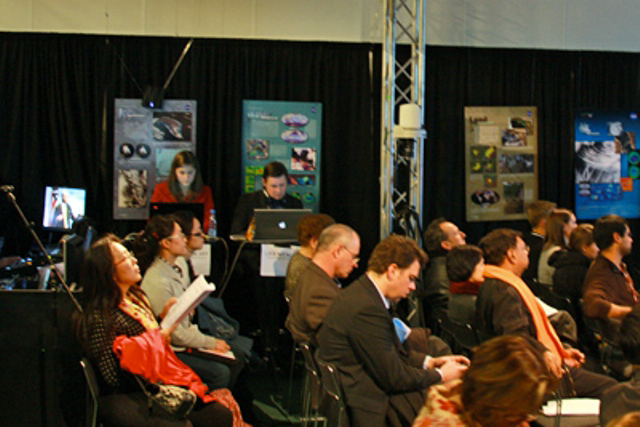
Global Web Chats at COP-15

U.S. Department of State’s office of International Information Programs coordinates global web chats during COP15 (Conference of the Parties to the UN Framework Convention on Climate Change) in Copenhagen, Denmark December 11, 2009.